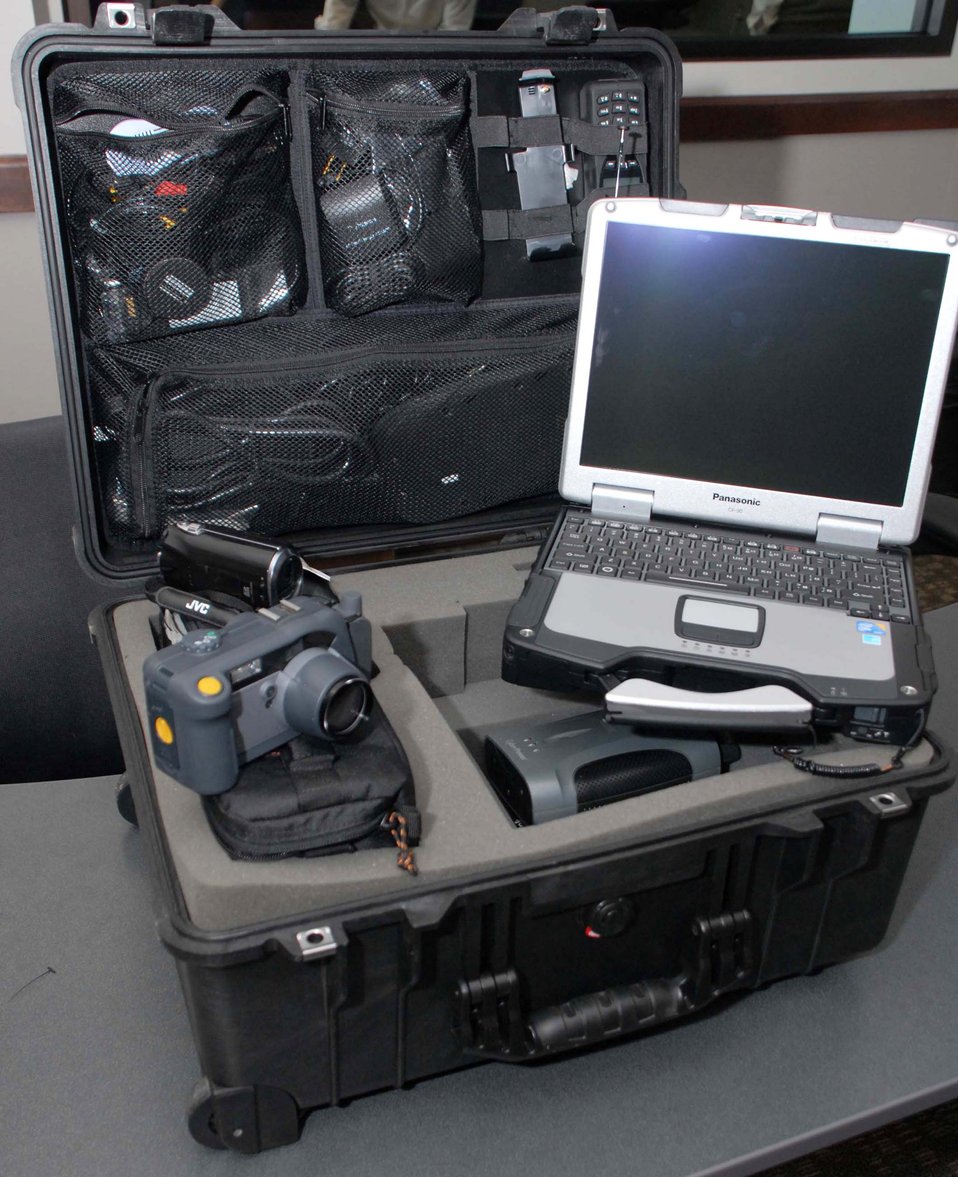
Technology boost

Five Geospatial Information Interoperability Exploitation Portable go kits, like the one shown here, were presented by Air Forces Northern officials to Civil Air Patrol members Jan. 26, 2011, at Maxwell Air Force Base, Ala. The GIIEPs feature self-contained communications equipment and other hardware that allows for real-time and near-real-time full-motion video, digital imagery and in-flight chat capability with federal, state and local emergency operations centers supporting emergency situations.